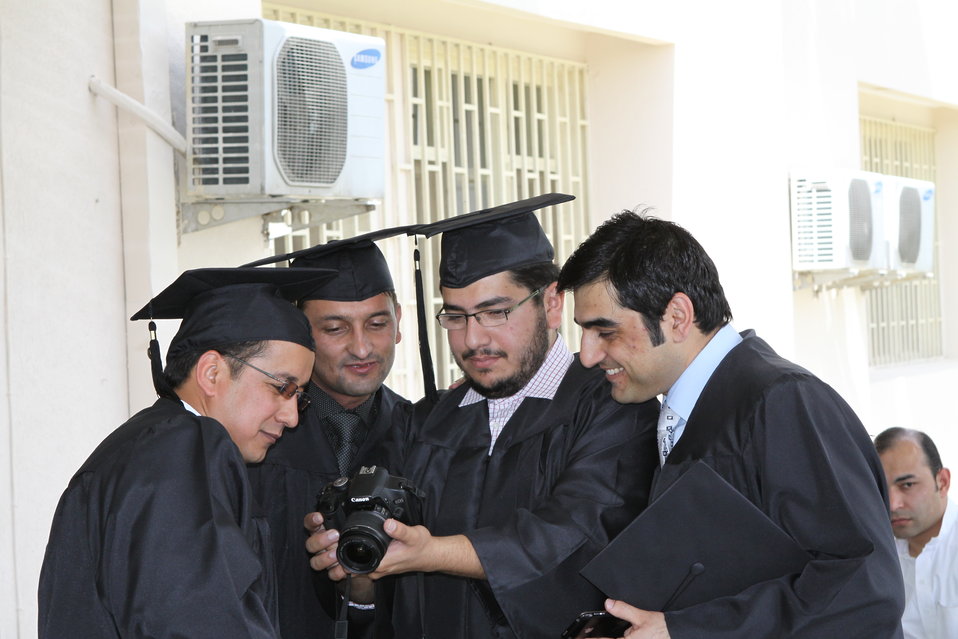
100526 AUAF Graduation 006